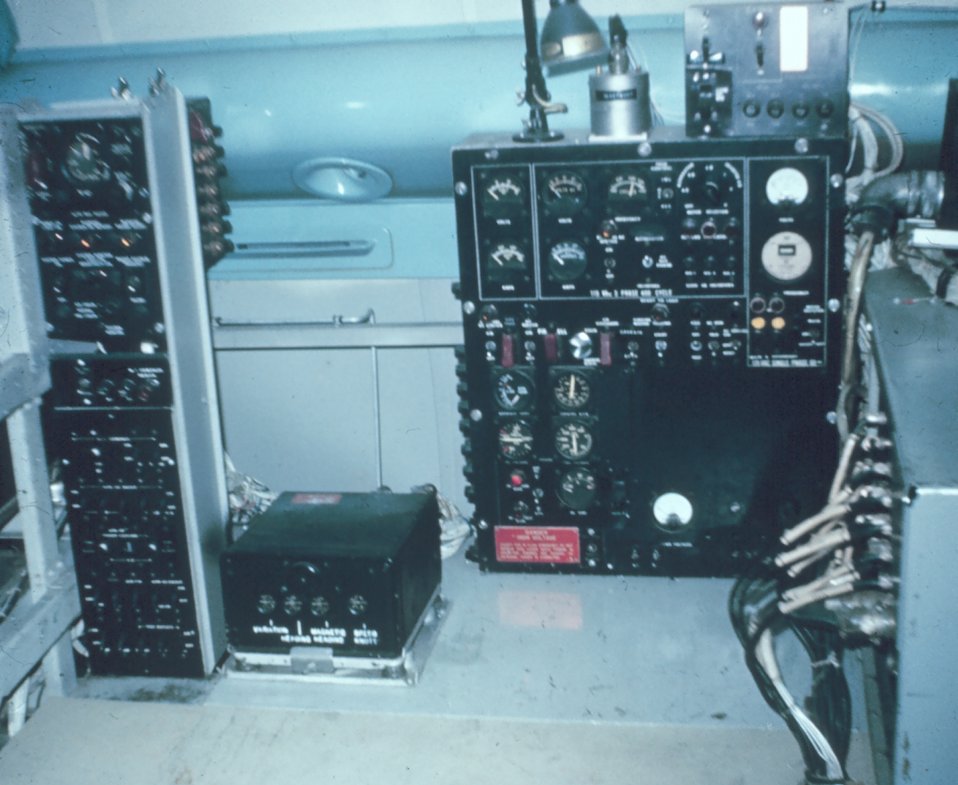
Various sensor recorders.